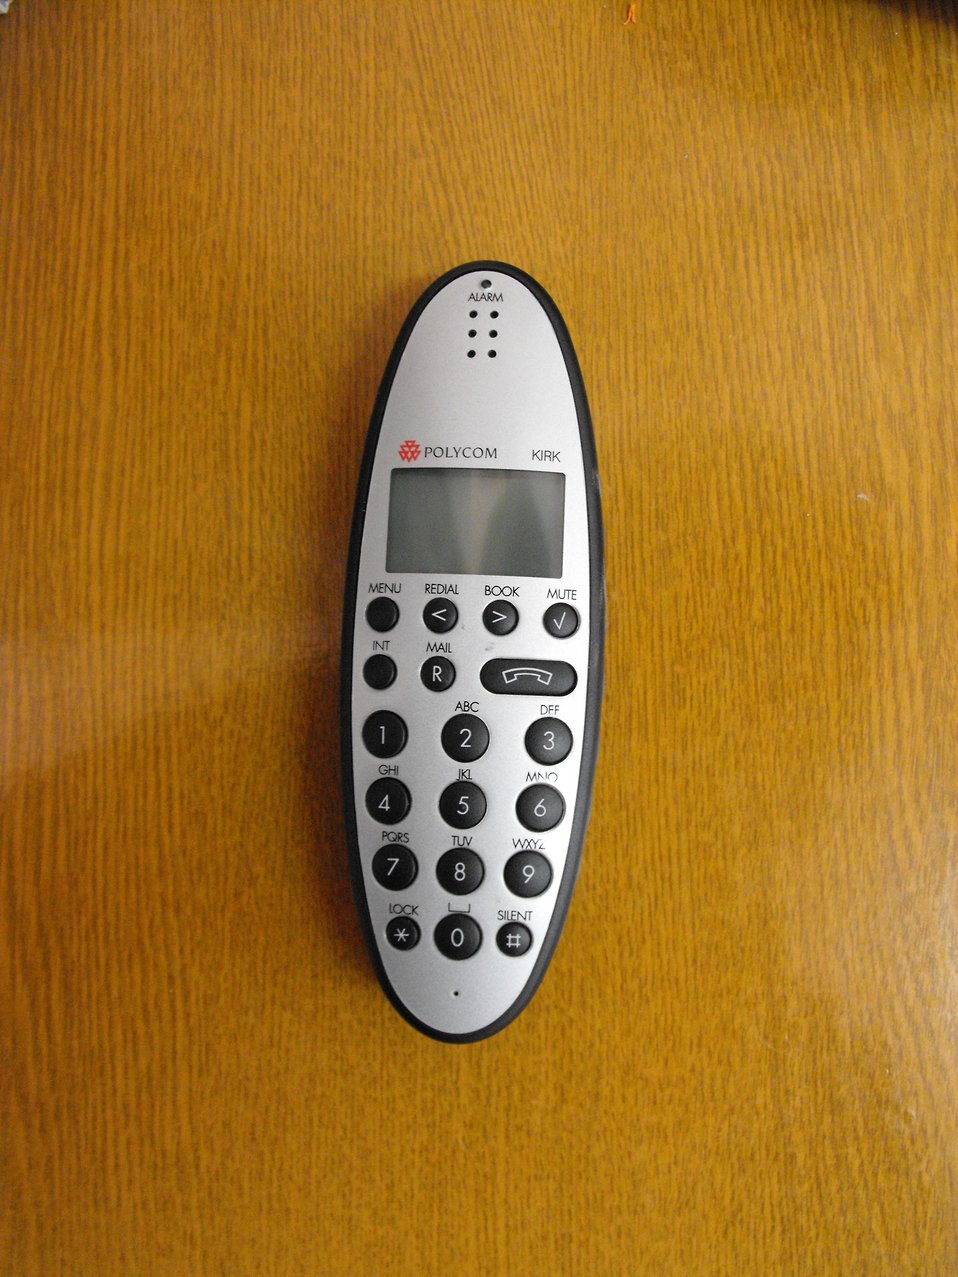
Polski: Aparat bezprzewodowy Z-4040 KIRK.